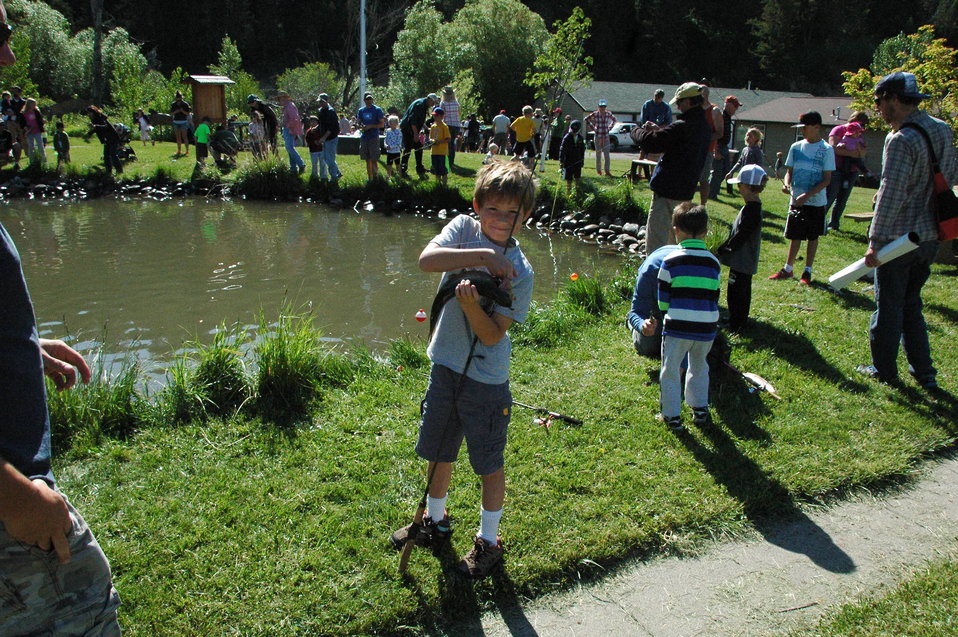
Proud of the Catch

It was a beautiful spring day in Montana June 7, 2014, when an estimated crowd of 2,000 attended the Welling Up for Watershed Festival & Fishing Derby. Each year the event is held in conjunction with the Watershed Festival, which is organized by the Montana Outdoor Science School. Based on the number of rainbow trout caught, cleaned, and bagged, approximately 600 kids took part in the pond derby. The derby was highly successful thanks to Bozeman Fish Technology Center, Aquatic Animal Drug Approval Partnership, and Montana Fish & Wildlife Conservation Office staffers and volunteers. Many of the parents and children in attendance praised the event and expressed gratitude for the volunteers and organizations involved. One exuberant mother of two boys exclaimed: 'this event is a great example of what Bozeman is all about!' The largest fish caught weighed 7.5 pounds.